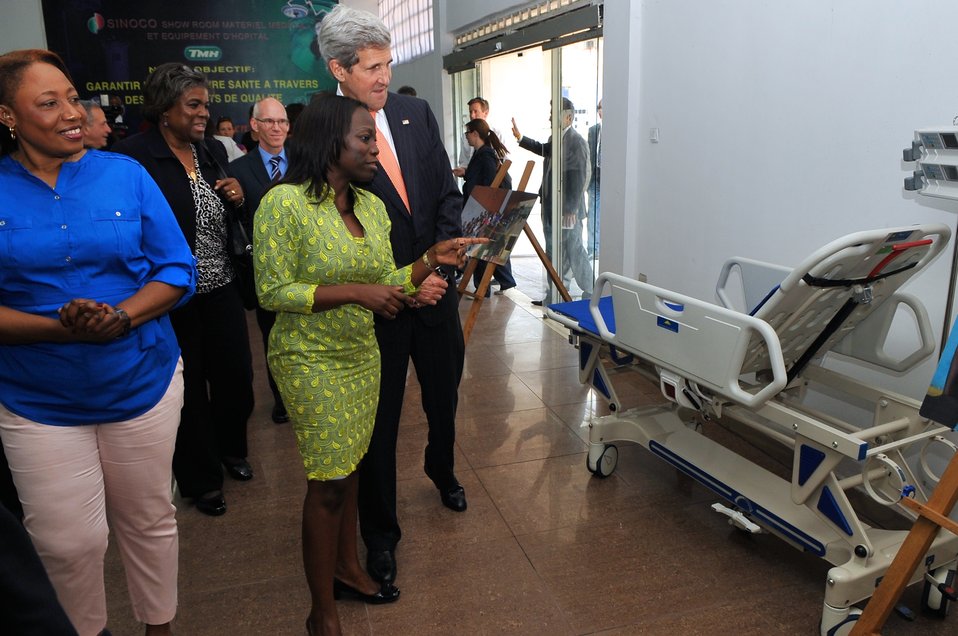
Secretary Kerry Tours Medical Supply Store in Kinshasa Started With Microfinance Program

Patricia Nzolantima explains to U.S. Secretary of State John Kerry how she provided microfinance assistance to women like Irene Mpoy, left, so they could start medical supply stores like the one he toured in Kinshasa on May 3, 2014.